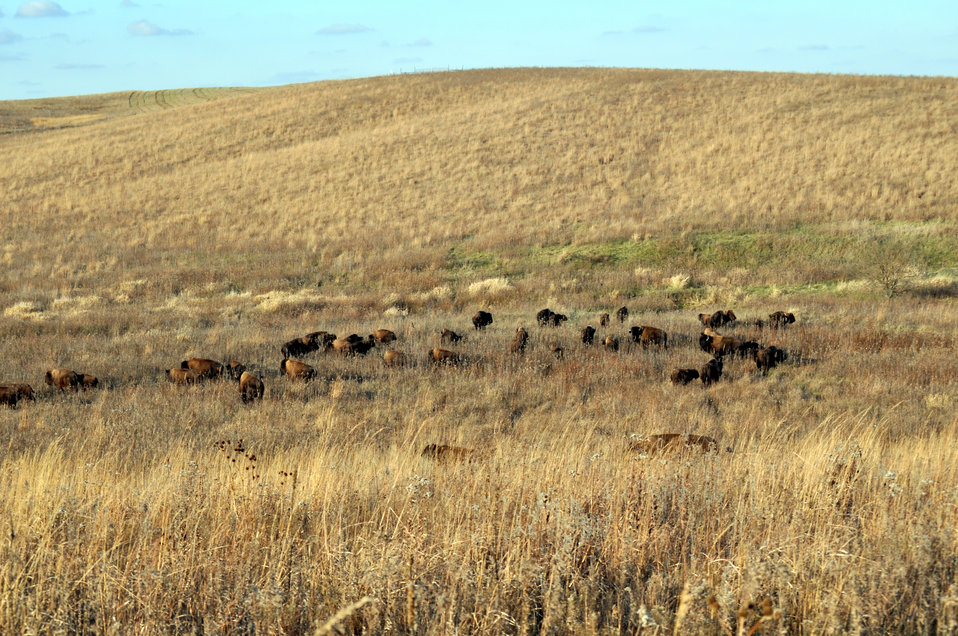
Bison at Dunn Ranch, an a prairie restored by The Nature Conservancy in northwest Missouri.